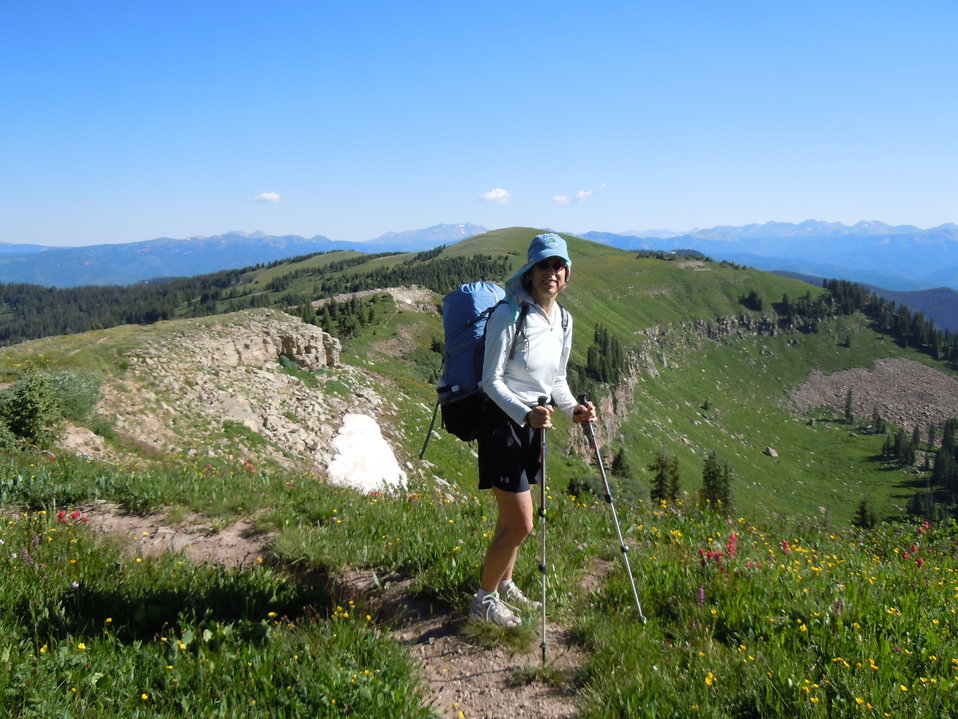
Partner-in-Mission Recovery Champion Betsy Neely

Betsy Neely of The Nature Conservancy received a 2011 Partners-in-MissionRecovery Champion award for conserving endangered and threatened Colorado plants as a member of the Colorado Rare Plants Conservation Initiative (RPCI) .

There are 15 threatened and endangered rare plant species in Colorado; the RPCI team plays a role in recovering all of these species. The RPCI worked to minimize threats to the species such as urban and rural development, oil and gas development, and recreational use among others. The team renewed an emphasis on rare plants, coordinated conservation efforts, maximized and leveraged funding for conservation and research efforts, enhanced and increased volunteer efforts for rare plant conservation, and increased awareness and education for these rare plants.

For more RPCI information please visit: conserveonline.org/workspaces/corareplantinitiative.

For information about the 2011 recovery champions, please visit the U.S. Fish and Wildlife Service’s Recovery Champion website at www.fws.gov/endangered/what-we-do/recovery-champions/inde....